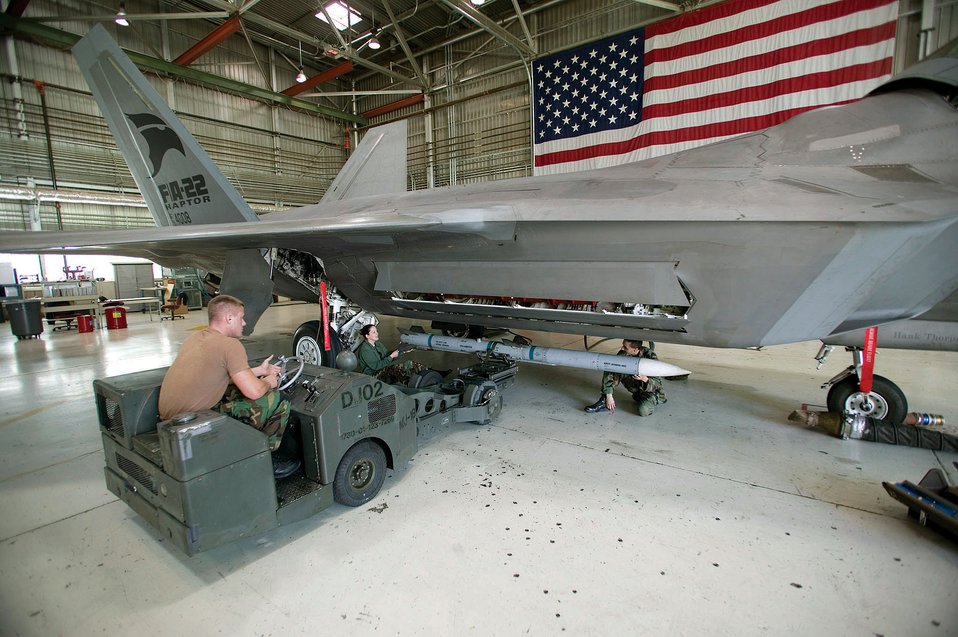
F-22 CTF tests missile noise, vibration

Senior Airman Daniel Myers and Staff Sgts. Daphne Jaehn and John Davenport load an AIM-120D Advanced Medium Range Air-to-Air Missile on an F-22A Raptor in preparation for noise and vibration testing at Edwards Air Force Base, Calif. The Airmen are assigned to the base's 412th Aircraft Maintenance Squadron and are with the F-22 Combined Test Force weapons flight.